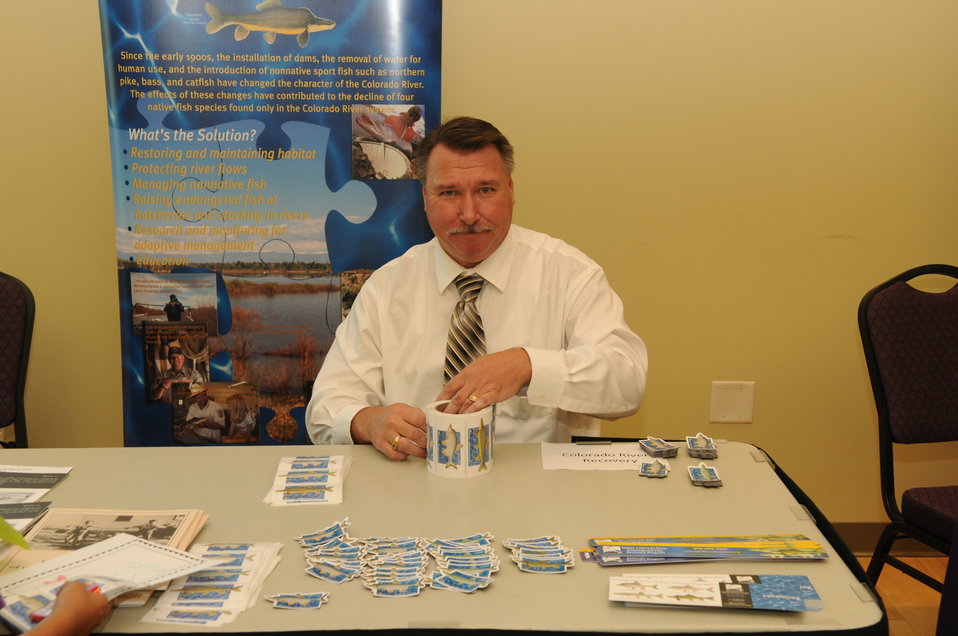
Youth Outreach

The U.S. Fish & Wildlife Service sponsored the 2012 Federal Duck Stamp Art Contest September 28 and 29 in Ogden, Utah, at Weber State University. A panel of five judges was responsible for choosing the art work used to design the 2013-2014 Migratory Bird Hunting and Conservation Stamp.